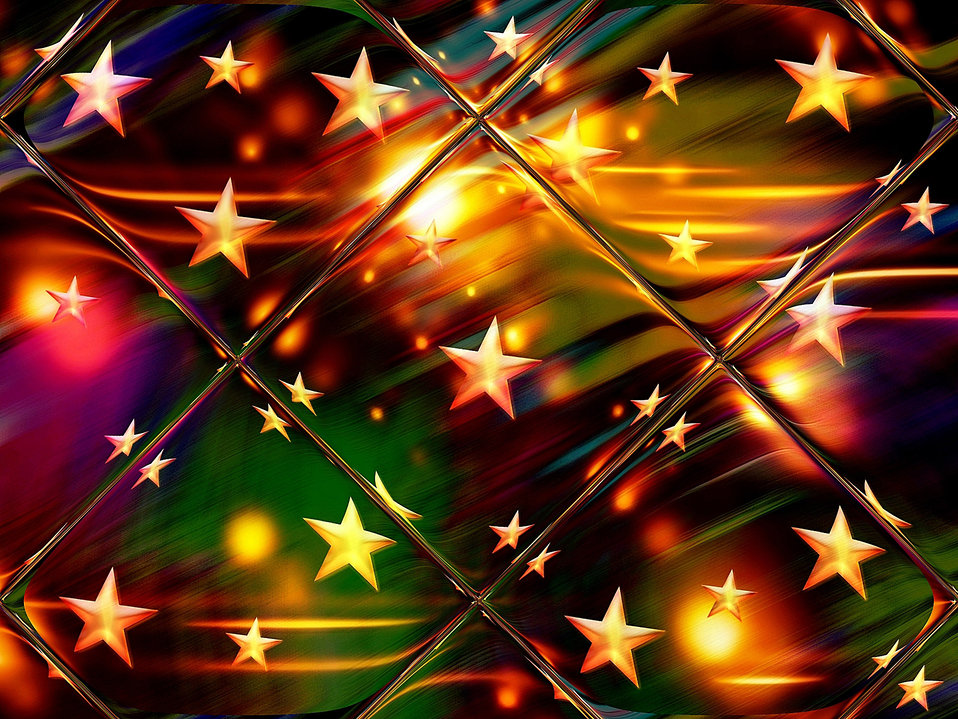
Background 254

Background.